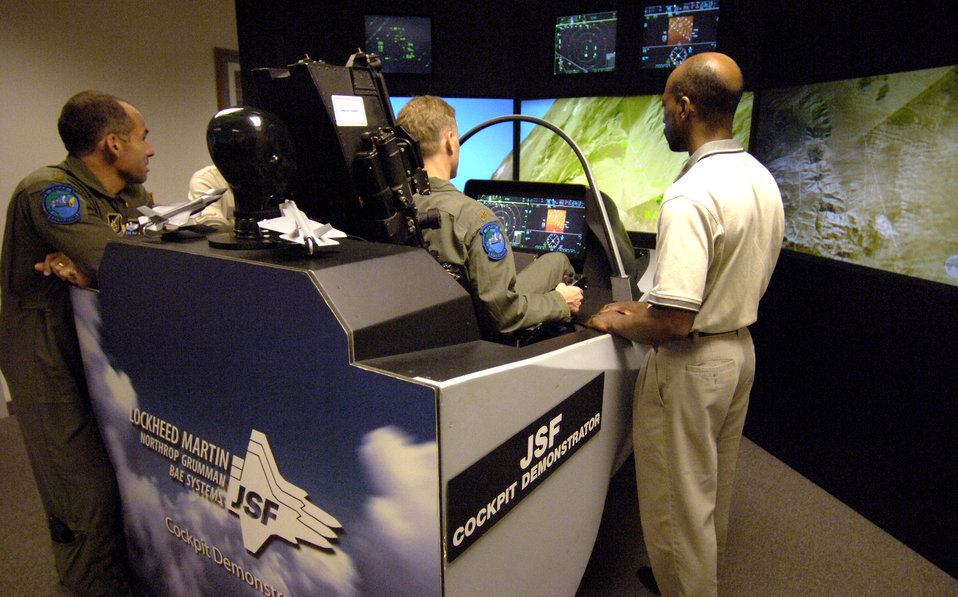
JSF

HICKAM AIR FORCE BASE, Hawaii (AFPN) -- Maj. Don Borchelt flies the F-35 Joint Strike Fighter aircraft simulator here. The simulator demonstrates the advanced capabilities of the F-35 -- the joint fighter of the 21st century. Major Borchelt is from the Headquarters Pacific Air Force advanced programs office.